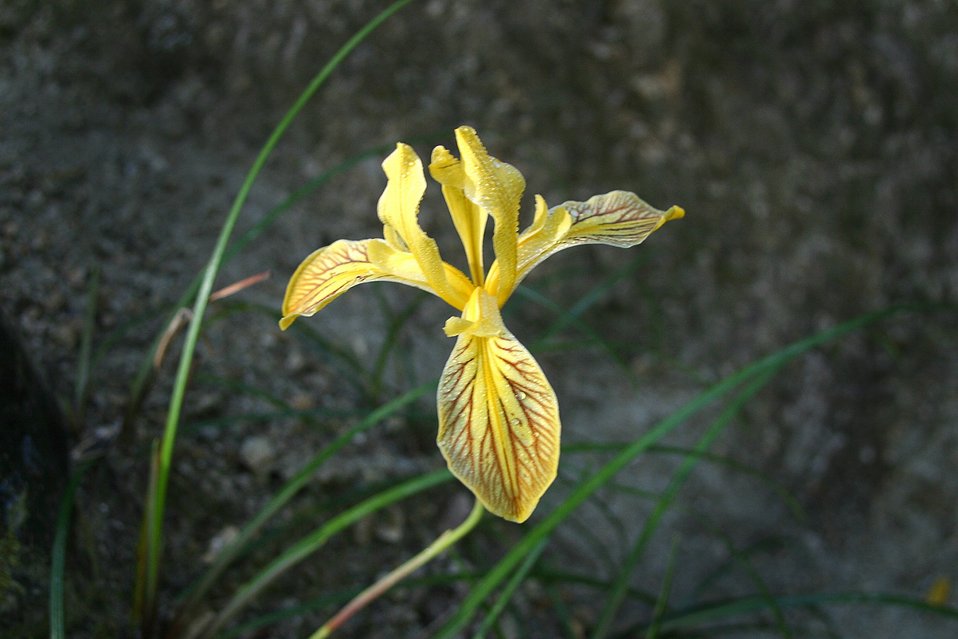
Wild section of the Rogue River from Grave Creek to Foster Bar. 3100 cfs at Grants Pass and 5300 at Agness.